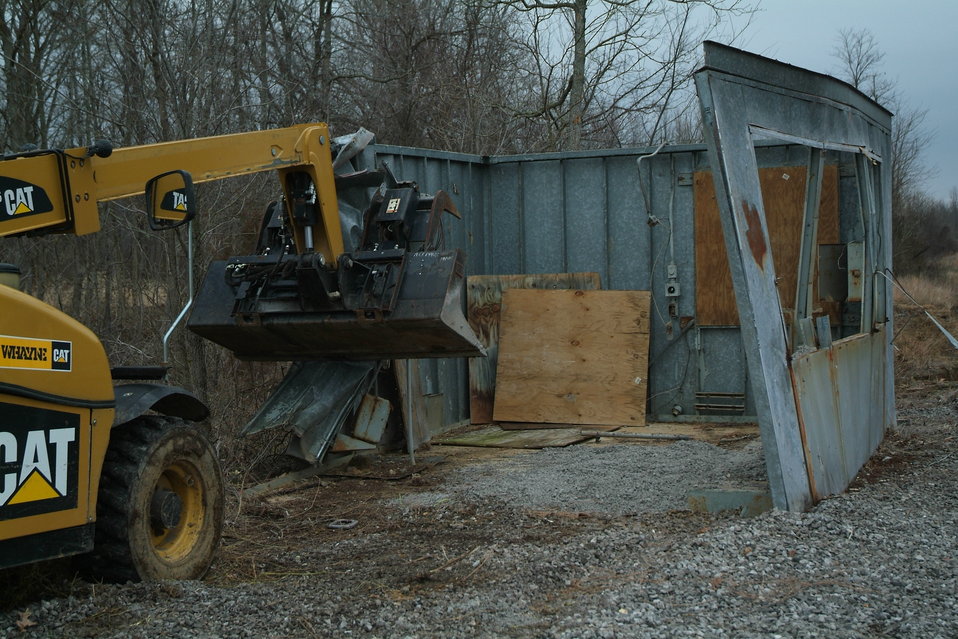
Old Railroad Scale House Removed at DOE’s Paducah Site

This railroad scale house, in West Kentucky Wildlife Management Area east of the Paducah site, was used in the 1950s to weigh Paducah Gaseous Diffusion Plant freight. Workers preserved the old scale because of its potential historical significance. The scale house was demolished.